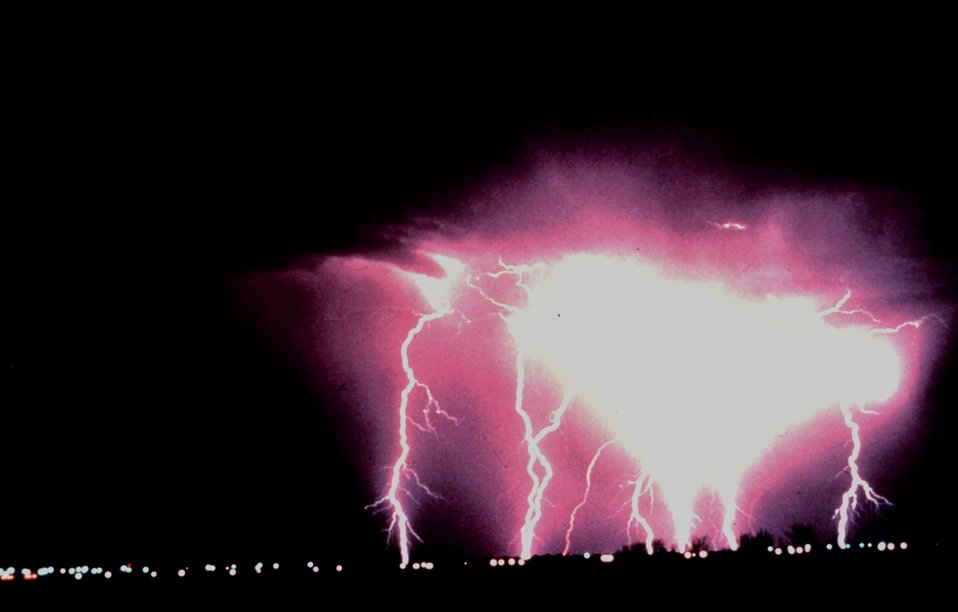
Intense cloud-to-ground lightning Caught using time-lapse photography during a night-time thunderstorm.